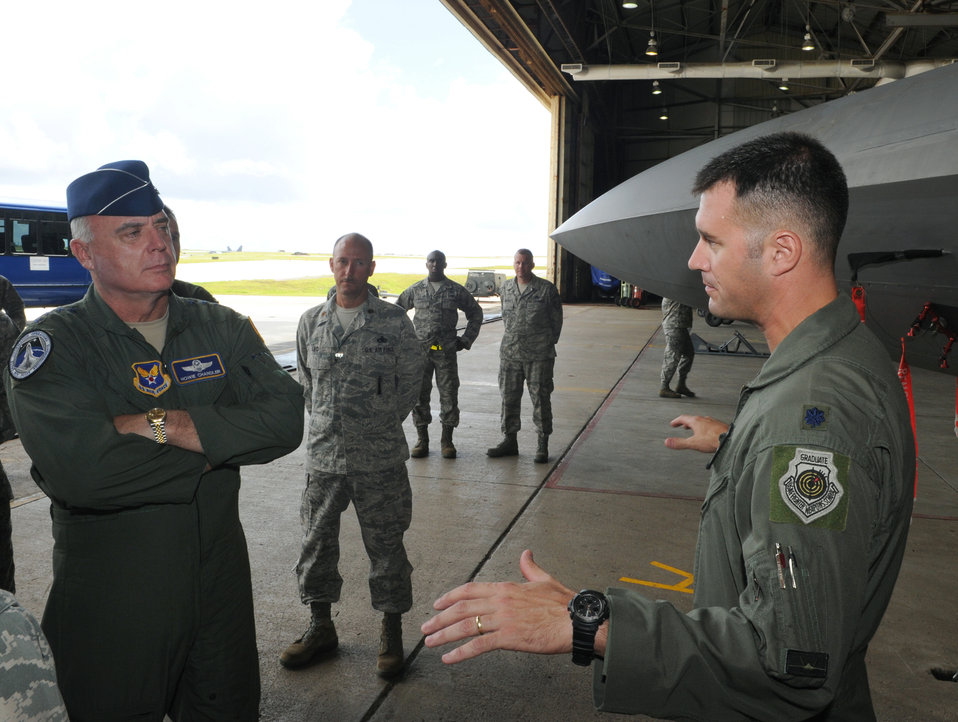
VCSAF visits Andersen AFB

Lt. Col. Peter Fesler discusses F-22 Raptor operations with Air Force Vice Chief of Staff Gen. Carrol H.